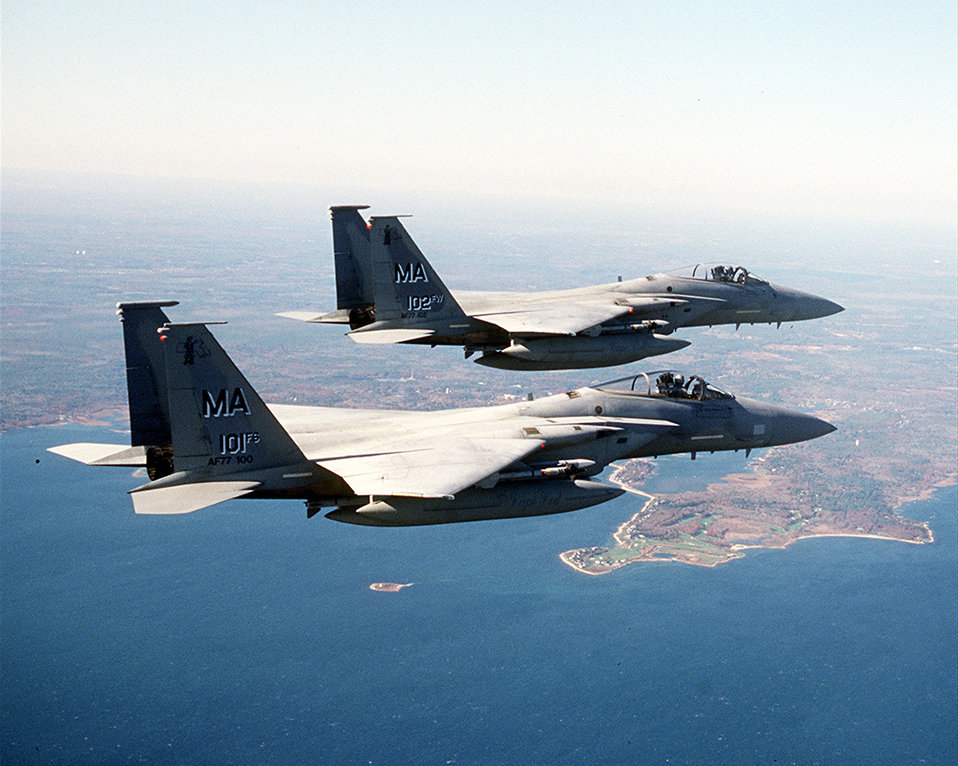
Noble Eagles

OPERATION NOBLE EAGLE -- Two F-15 Eagles from the Massachusetts Air National Guard's 102nd Fighter Wing fly a combat air patrol mission over New York City in support of Operation Noble Eagle. North American Aerospace Defense Command has more than 100 ANG and Air Force Reserve fighters from 26 locations providing homeland defense, with another 100 fighters backing them up.